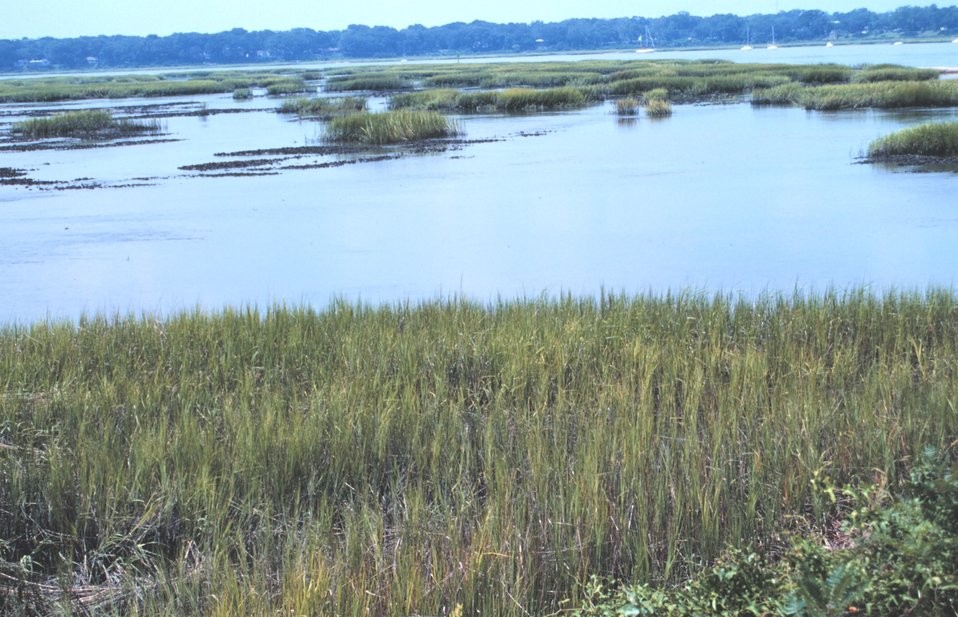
Wetlands along the Beaufort River